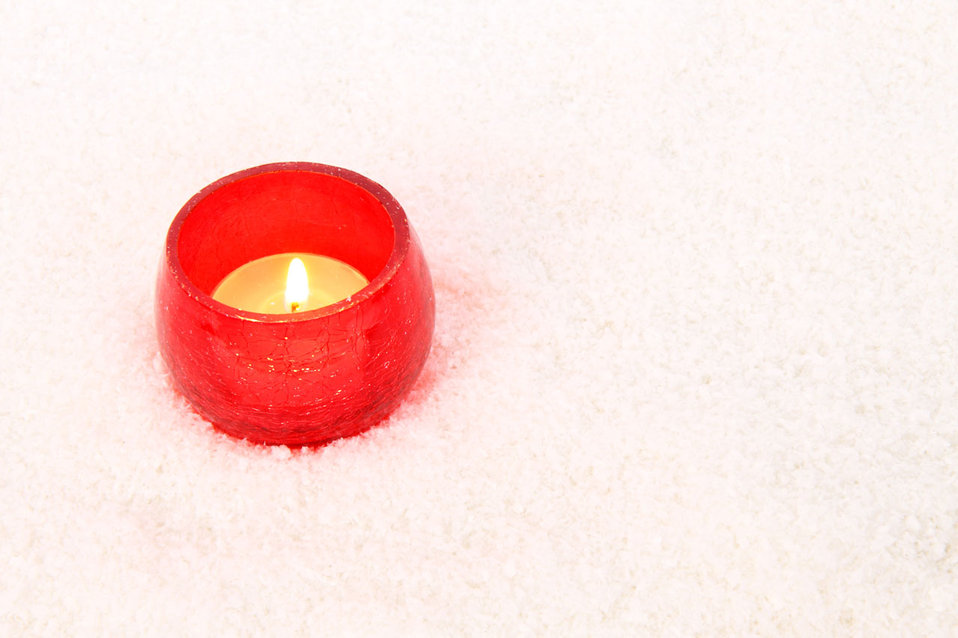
Red candle in snow.